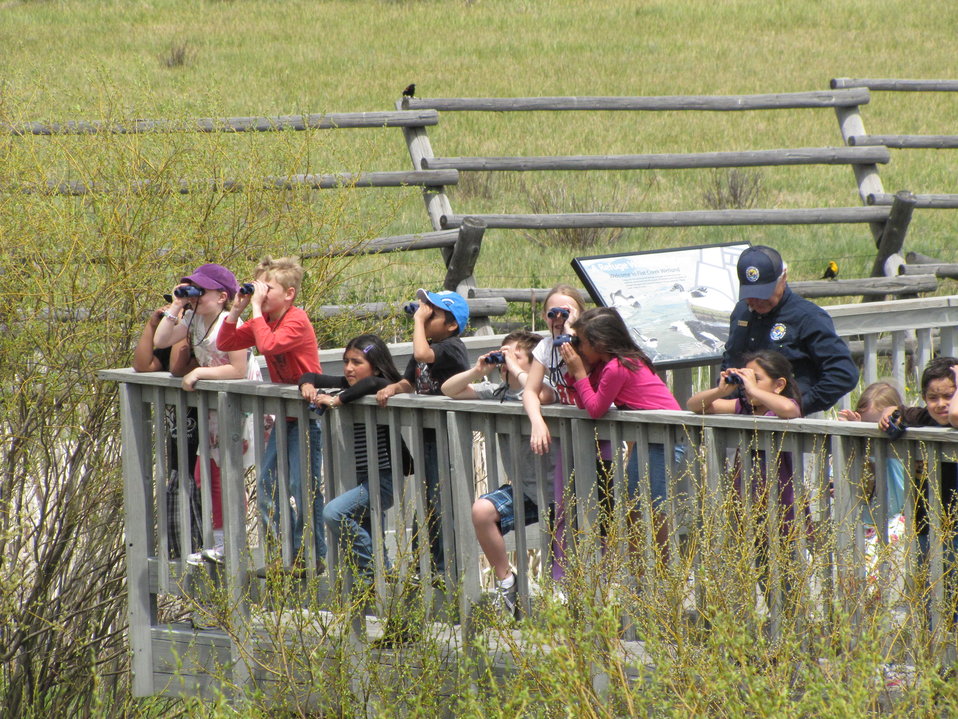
Bird Watching

A yellow-headed blackbird looks over the shoulder of National Elk Refuge volunteer Steve Miller as he leads a binocular lesson for a group of students in the wetlands area by the Jackson Hole & Greater Yellowstone Visitor Center.